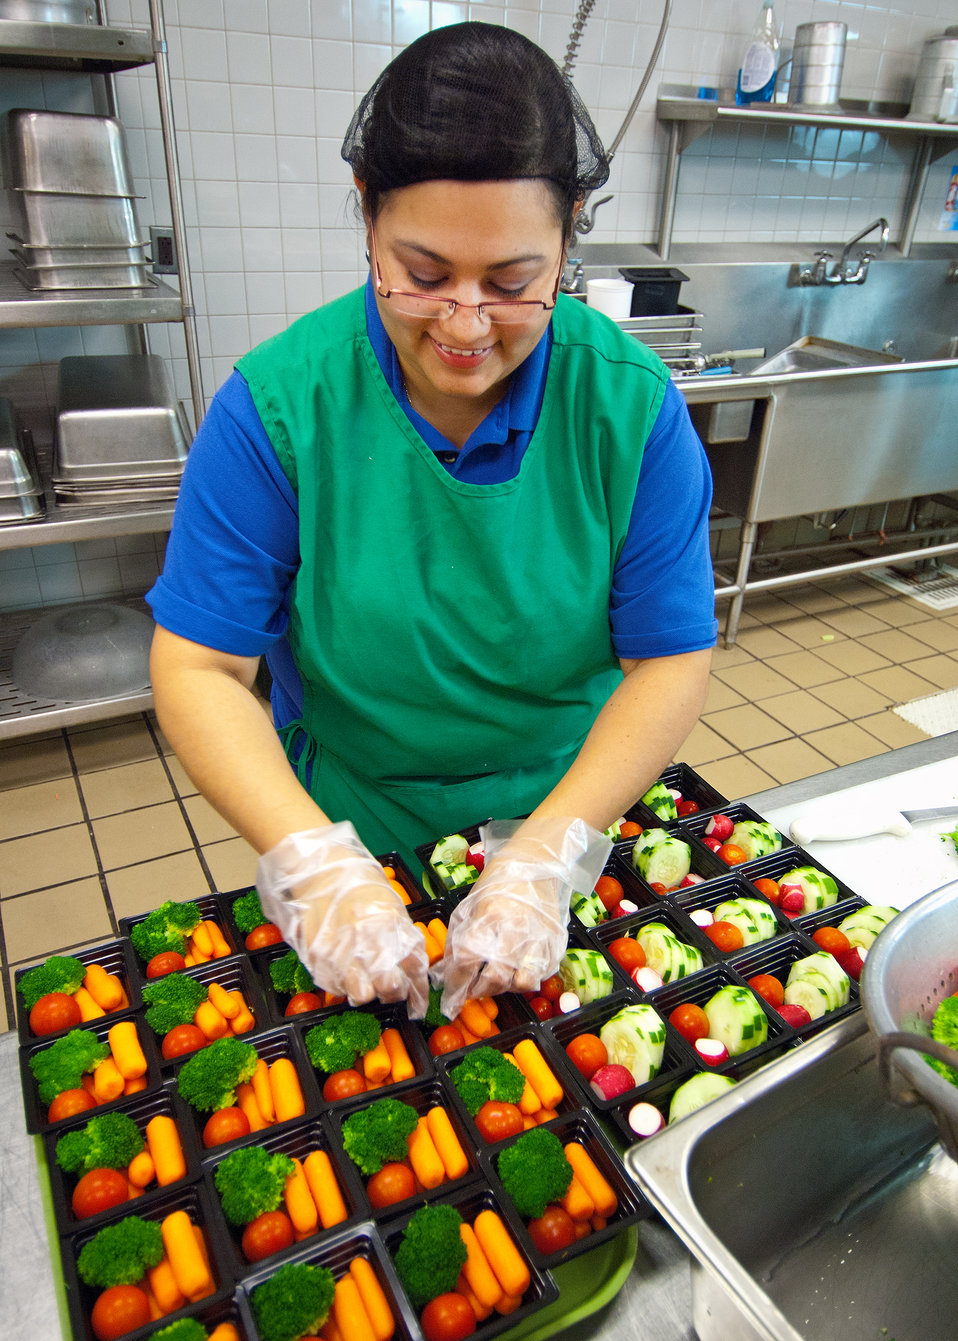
Rosalba Gomez, Arlington Food Services prepares fresh vegetable cups for the National School Lunch Program in the kitchen at Washington-Lee High School in Arlington, Virginia, on Wednesday, October 19, 2011. The National School Lunch Program is a federally assisted meal program administered by the United States Department of Agriculture, Food and Nutrition Service operating in public, nonprofit private schools and residential child care institutions. It provides nutritionally balanced, low-cost or free lunches to children each school day.